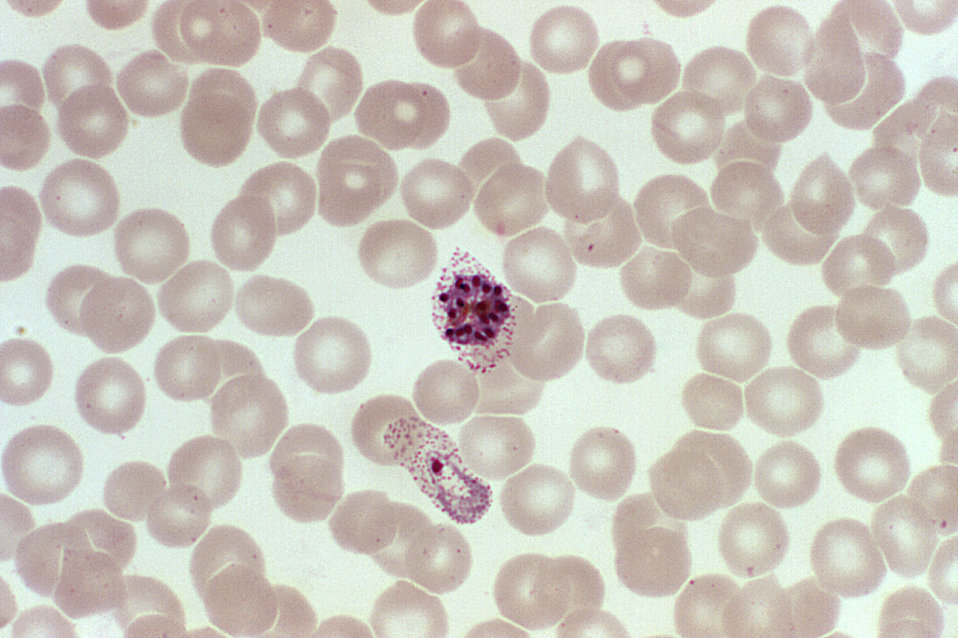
This photomicrograph shows a red blood cell being infected by Plasmodium vivax during its schizont stage.